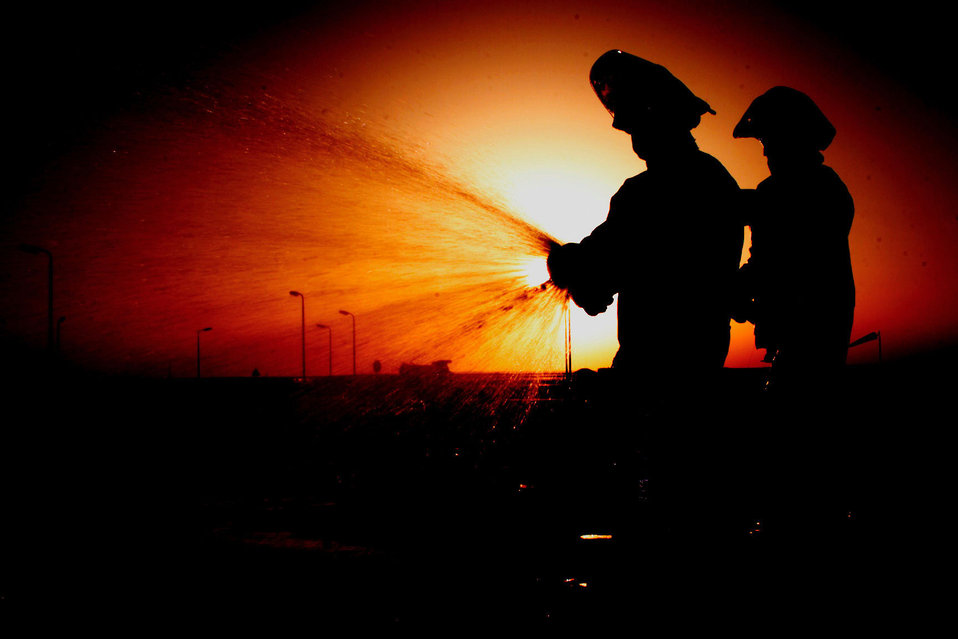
Fightin' fire

OPERATION ENDURING FREEDOM -- Airmen 1st Class Heath Bichel (left) and Michael Long run an operations check on a fire hydrant hose on Al Udeid Air Base, Qatar. Both airmen are firefighters with the 379th Expeditionary Civil Engineer Squadron.